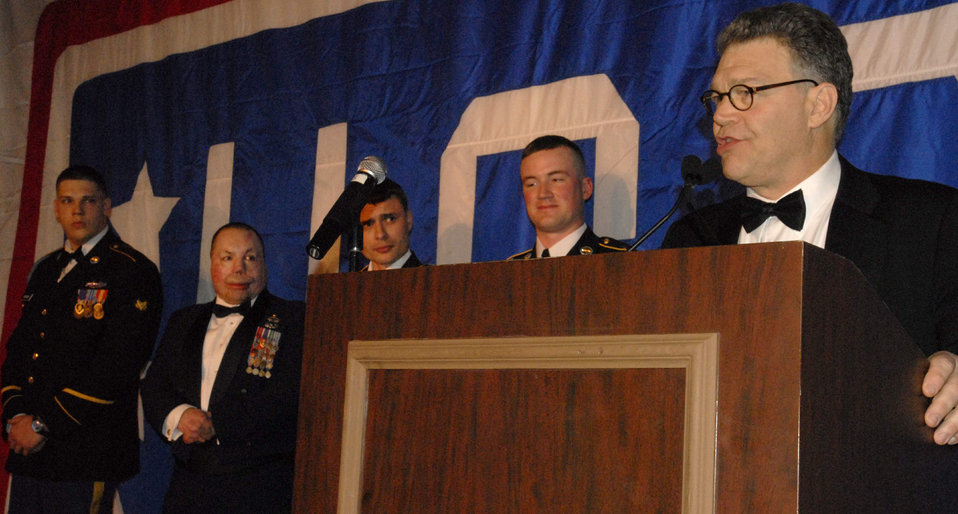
Servicemembers honored at annual USO-Metro gala

Al Franken (right), introduced by four previous medal recipients, accepts the Merit Award at the United Services Organization's Annual Award Dinner at the Ritz Carlton March 25 in Washington, D.C. Mr. Franken is a seven-time overseas visitor overseas and frequent military hospital visitor in the United States.